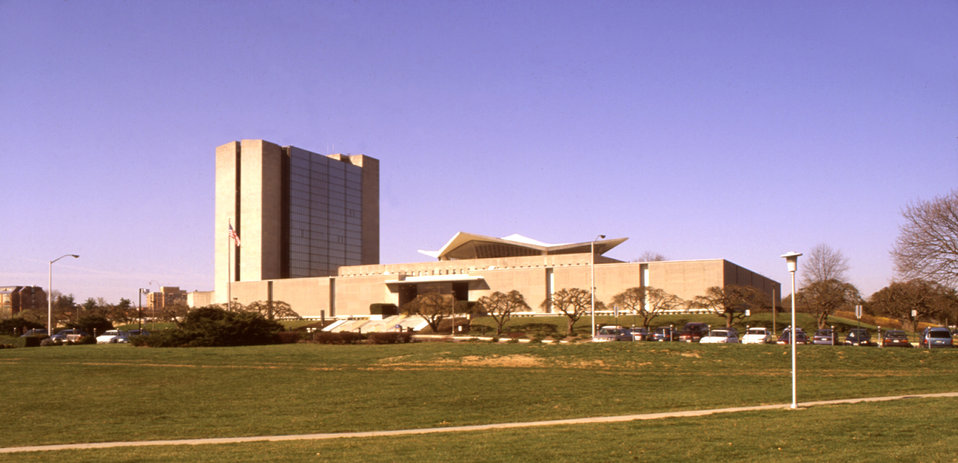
This 1999 photograph depicted the National Library of Medicine (NLM), located on the campus of the National Institutes of Health in Bethesda, Maryland. It is the world's largest medical library, collecting materials, and providing information and research services in all areas of biomedicine and health care.The NLM's MedlinePlus� online database, can help consumers find information on health topics of all kinds, including diseases, wellness, hospitals, physicians, and pharmaceuticals. NLM also coordinates the National Network of Libraries of Medicine, which provides health care professionals and the public equal access to biomedical and health care information resources.